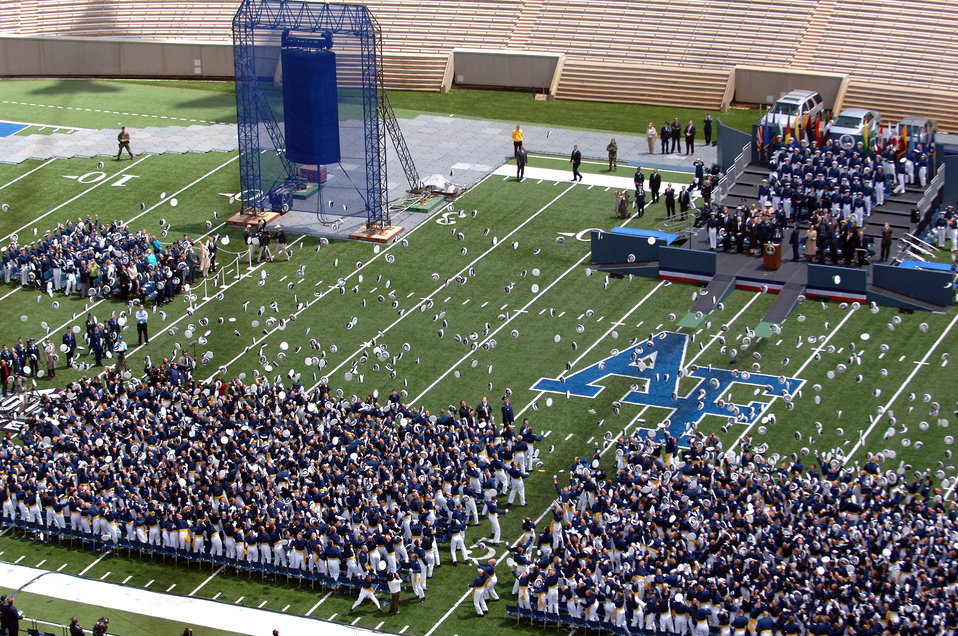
From cadet to lieutenant

Hats are tossed as the U.S. Air Force Thunderbirds fly over the 2007 Air Force Academy Graduation Ceremony May 30 in Colorado. The ceremony marks the culmination of four years at the academy and their transition from cadet to the Air Force's newest second lieutenants.